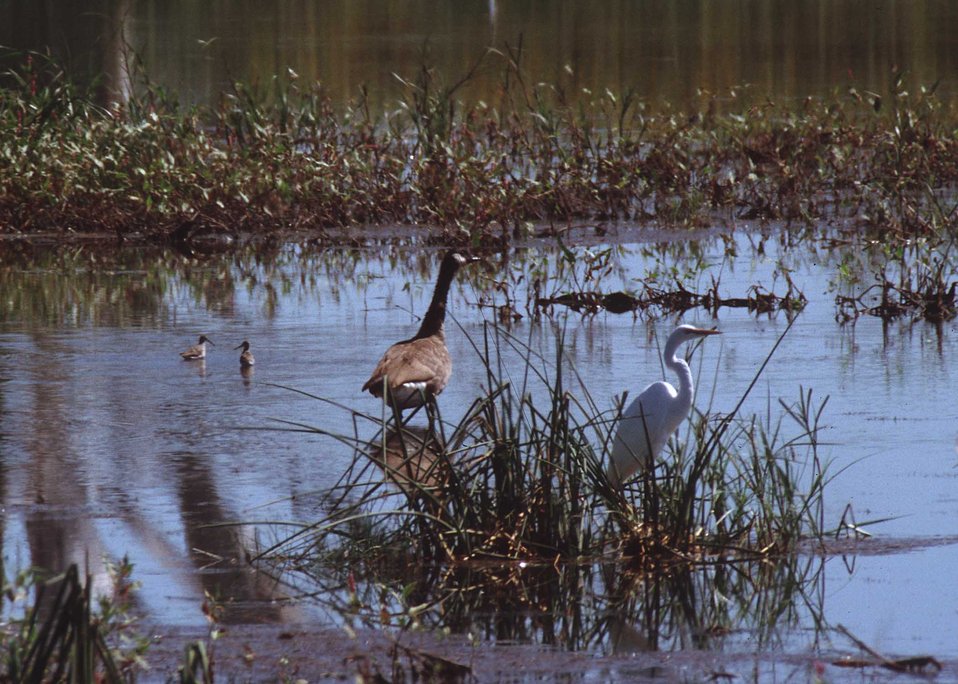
Canada geese, common egret and shore birds in a pothole.